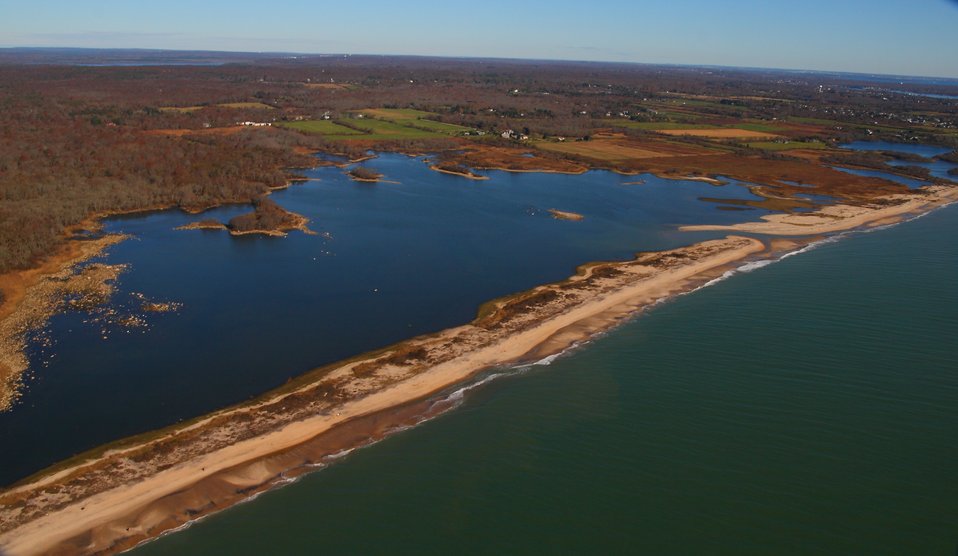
Breach at Trustom Pond National Wildlife Refuge following Sandy (RI)

Breach alond the Rhode Island coastline mixing saltwater and freshwater and ultimately transforming Trustom Pond in the days to follow Hurricane Sandy.